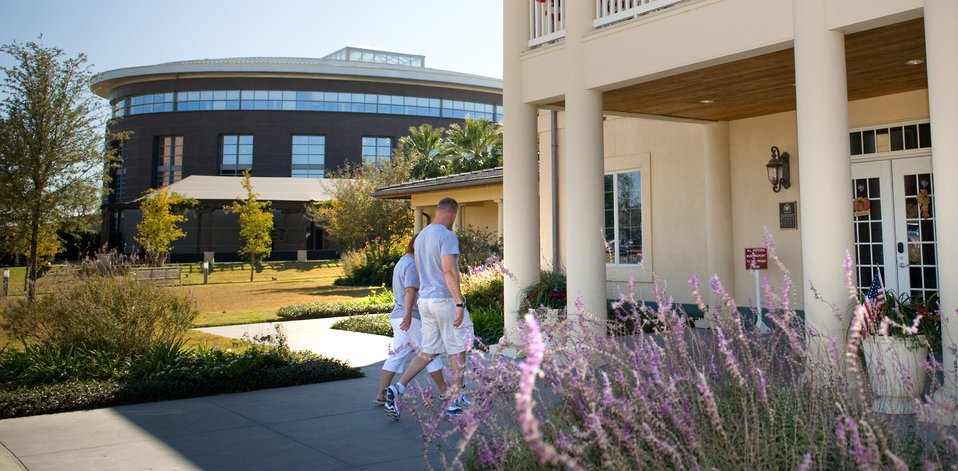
AF Spouse Raises Half a Million for Fisher House

A patient and spouse enter their temporary home in one of the two newest Fisher Houses (right) in San Antonio on Nov. 25. Each of these 16,800 square foot Fisher Houses can accommodate up to 42 families visiting their injured love ones. Next door is the Center for the Intrepid, a 65,000 square foot rehabilitation center in San Antonio. Private donations were used to fund their construction, operation and maintenance.